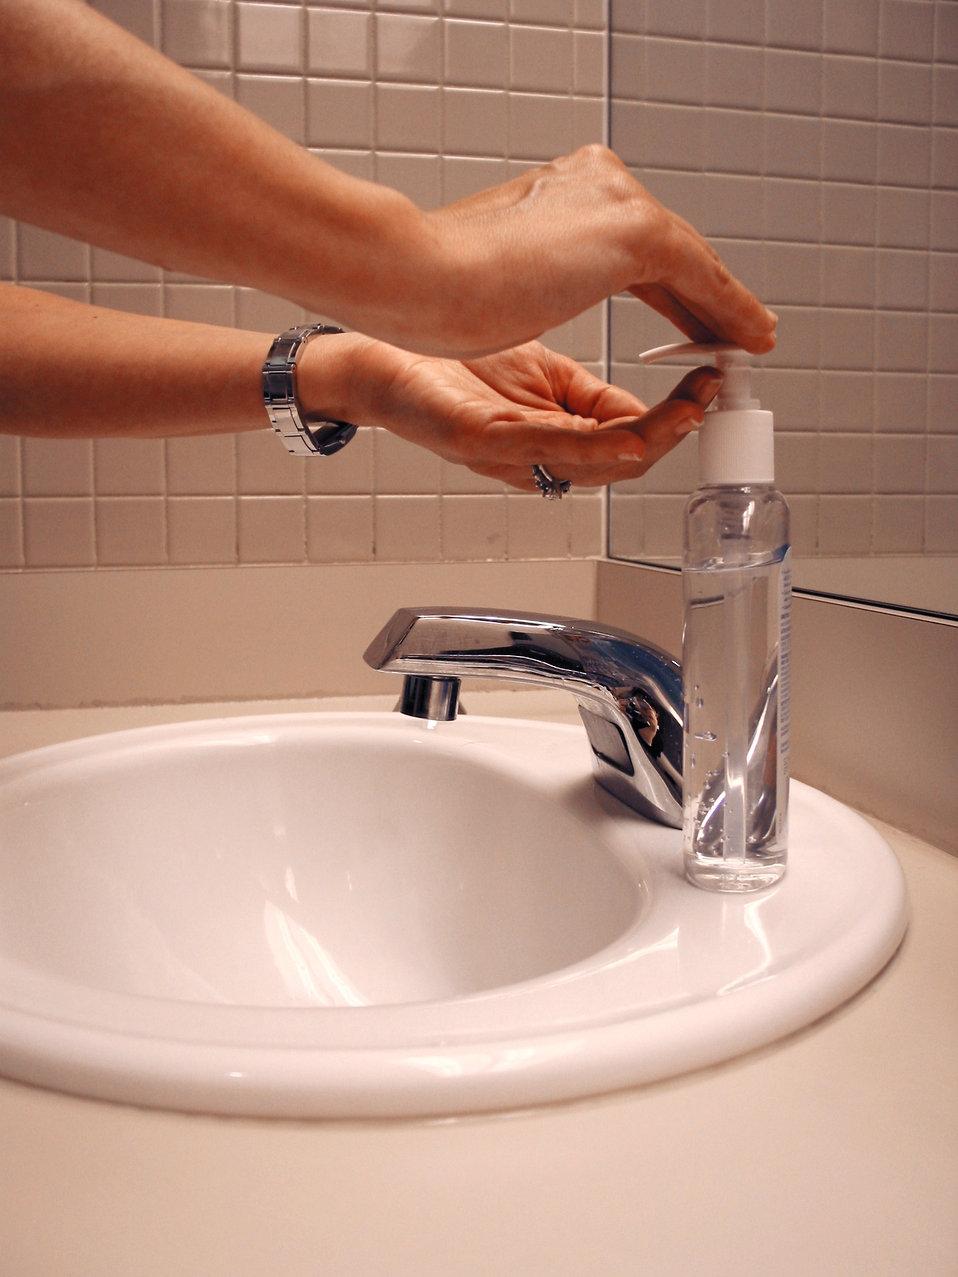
This image demonstrates how a smallpox vaccinee washes her hands after handling her vaccination site bandage.